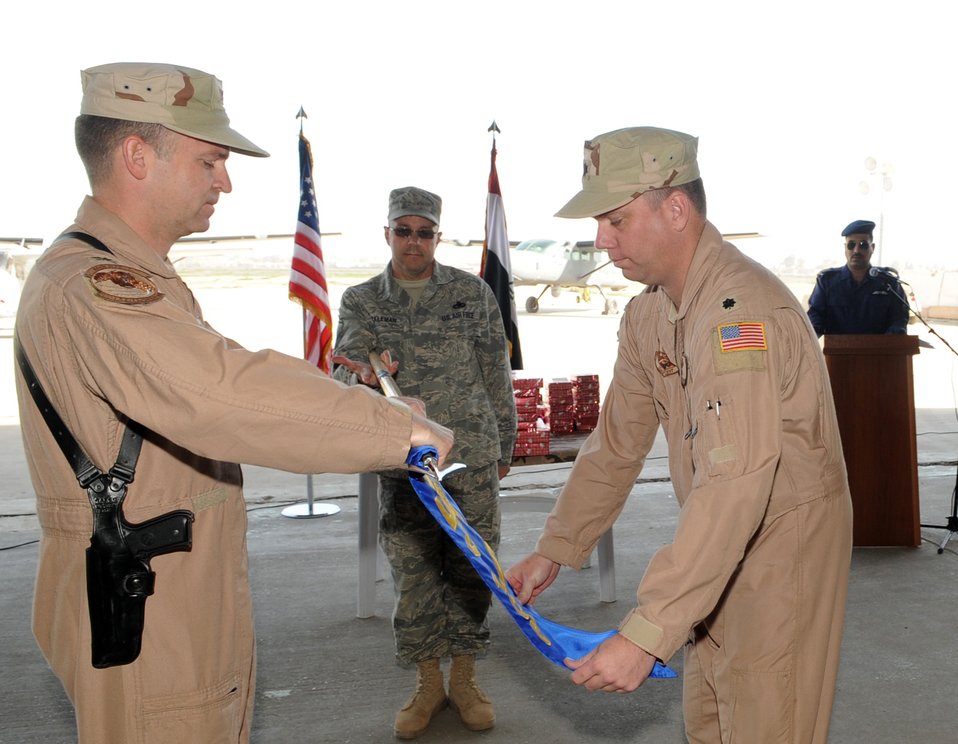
Laughlin pilot helps launch Iraqi air force

Col. Chris Pehrson and Lt. Col. Christopher Spigelmire decommission the 521st Air Expeditionary Advisory Squadron guideon Jan. 11, 2010, at Kirkuk Air Base, Iraq. Colonel Pehrson is the 321st Air Expeditionary Advisory Group commander and Colonel Spigelmire is the 521st Air Expeditionary Advisory Squadron commander